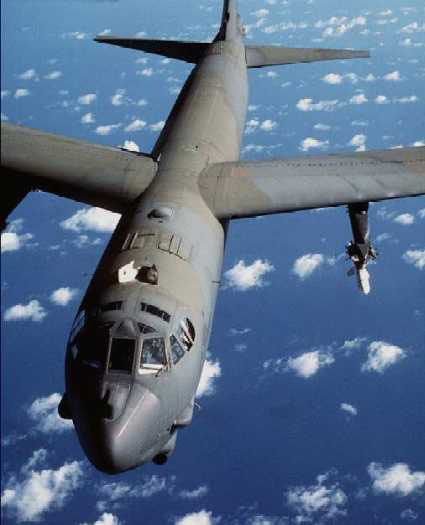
AGM-84D Harpoon

FILE PHOTO -- A B-52H Stratofortress carries the AGM-84D Harpoon missile. The Harpoon is an all-weather, over-the-horizon, anti-ship missile system.